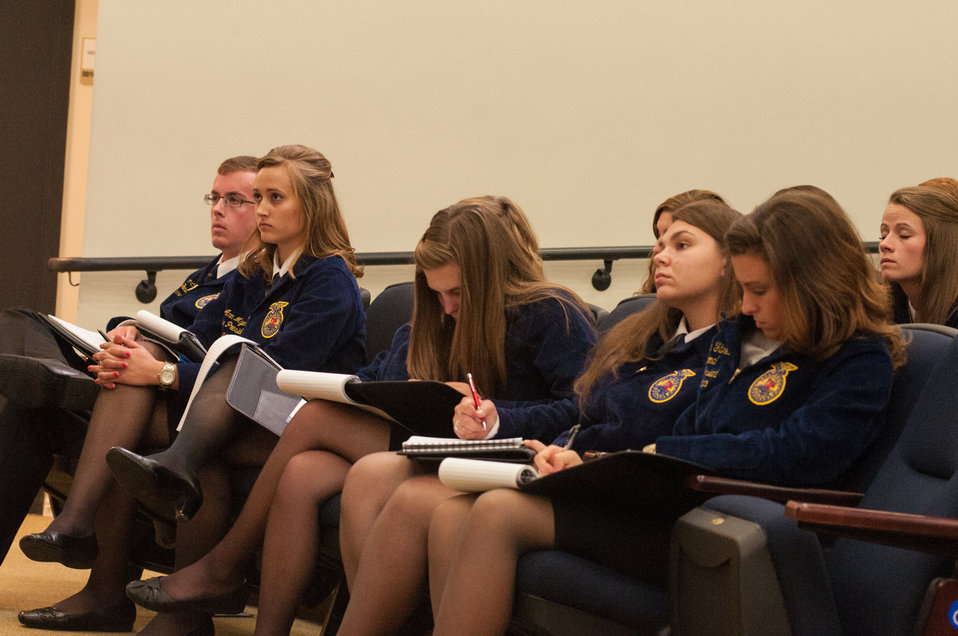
FFA National State President’s take notes during Agriculture Secretary Vilsack’s discussion on international, national and agricultural production topics during a meeting of the White House Rural Council on Wednesday, Jul. 24, 2013 in Washington, D.C.